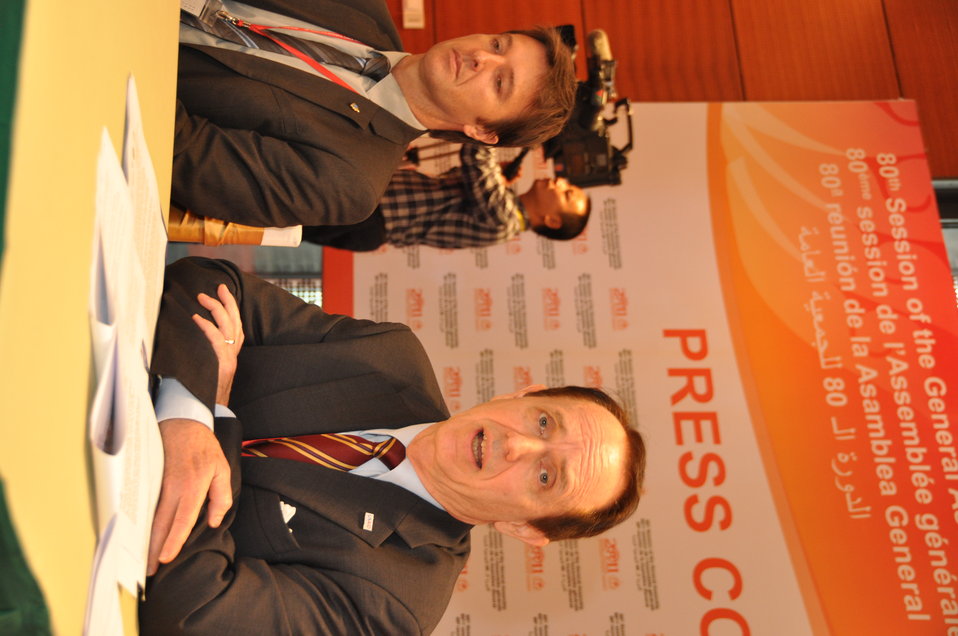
USAID MIssion Director Francis Donovan at the INTERPOL General Assembly in Hanoi, November 2011

Project Predator, an initiative to protect and save the world's last surviving wild tigers, was unveiled today at the 80th INTERPOL General Assembly, a gathering of global law enforcement support from the organization's 190 member countries.

Created by INTERPOL, Project Predator unites the efforts of police, customs and wildlife officials in the 13 countries in Asia where wild tigers can still be found. This new partnership under the Global Tiger Initiative brings together officials from the 13 tiger range countries, the U.S. Agency for International Development (USAID), the UK's Department for Environment, Food and Rural Affairs (Defra), the World Bank, the Smithsonian Institution and INTERPOL.